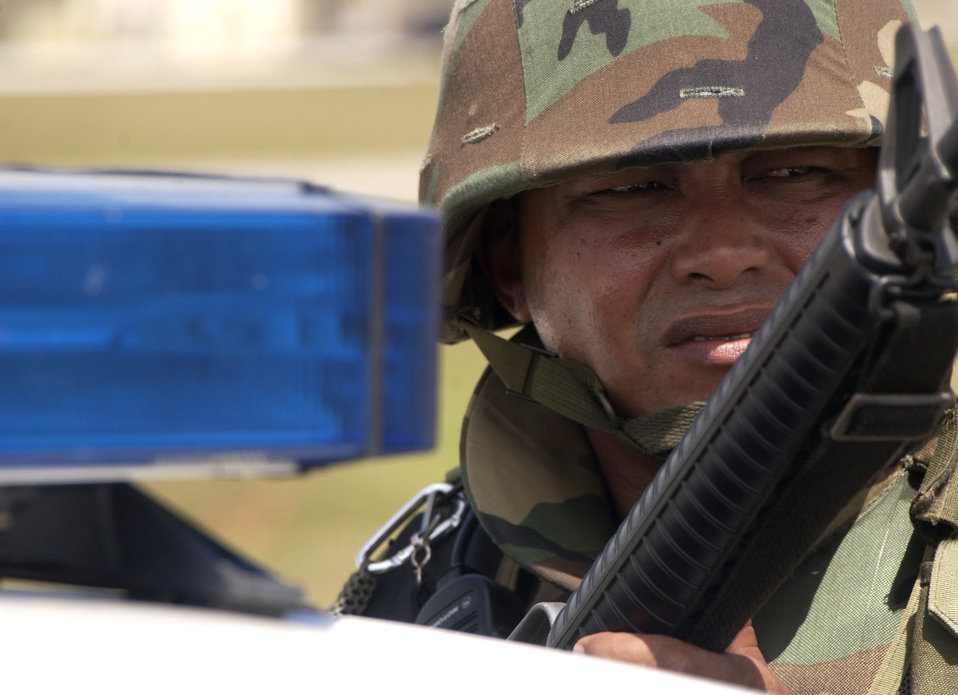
A keen eye

ANDERSEN AIR FORCE BASE, Guam -- A security forces Airman responds to a simulated robbery during Beverly Palm Exercise 05-03 here May 11. Beverly Palm is a quarterly exercise designed to fine tune the deployment and reception mission here. The Airman is assigned to 36th Security Forces Squadron.